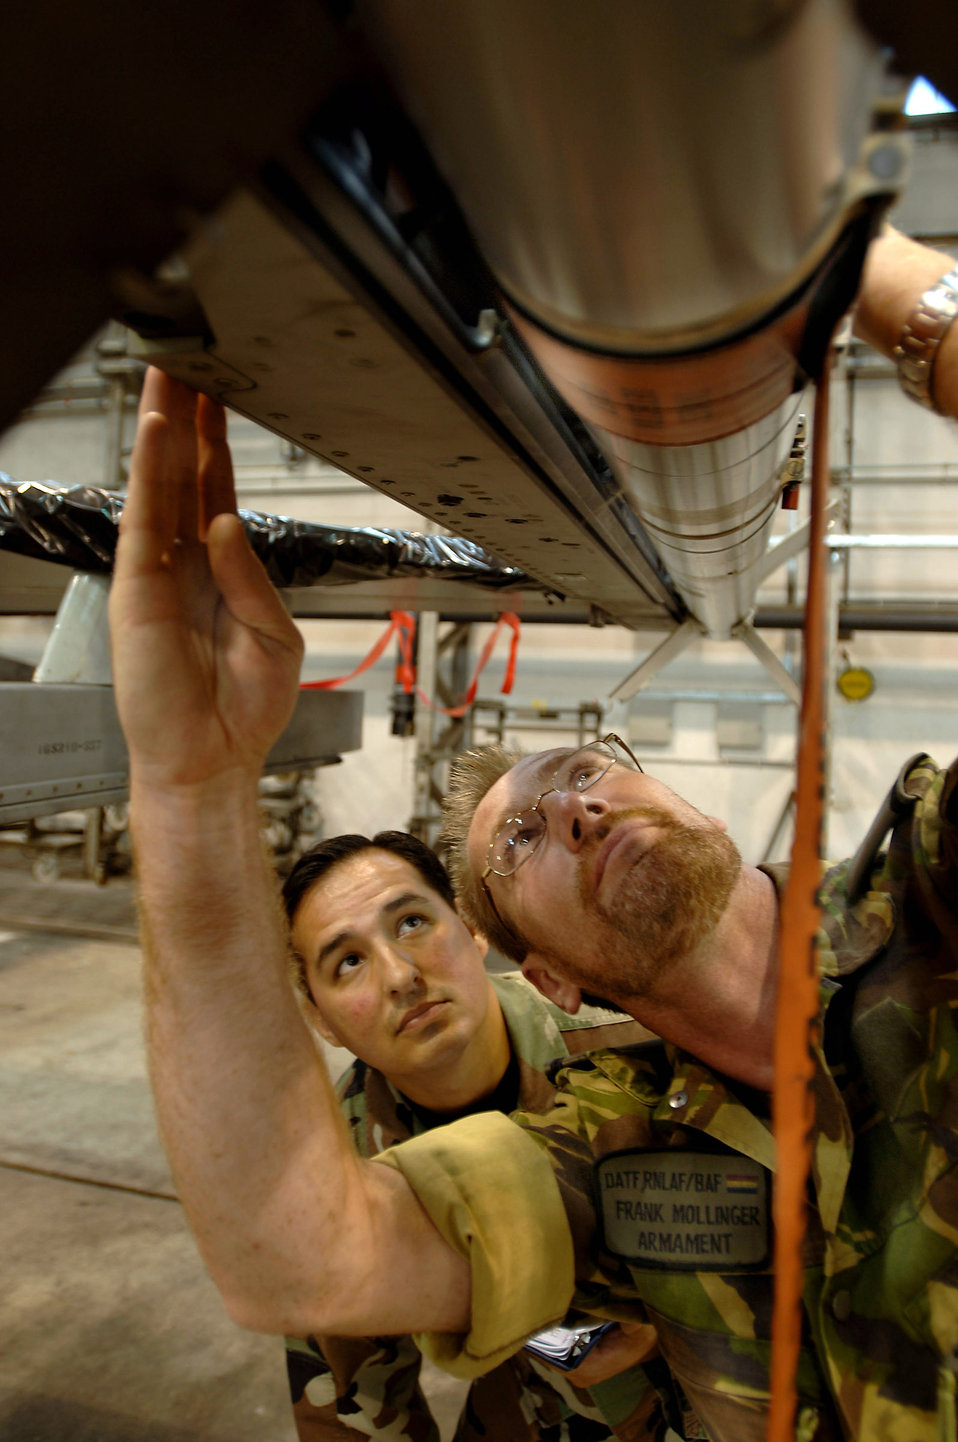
Munitions troops help give Dutch fighters a strike punch

VOLKEL AIR BASE, Netherlands -- Staff Sgt. Carlos Madrid (back) ensures Dutch air force Chief Warrant Officer Frank Mollinger follows guidelines for the proper upload of special weapons onto a Dutch F-16 Fighting Falcon during one of many weapons load exercise the two air forces do each quarter. Teamwork is essential for American and Dutch Airmen to accomplish the NATO strike mission. Sergeant Madrid is assigned to the 703rd Munitions Maintenance Squadron, and Chief Mollinger is assigned to the 1st Fighter Wing.